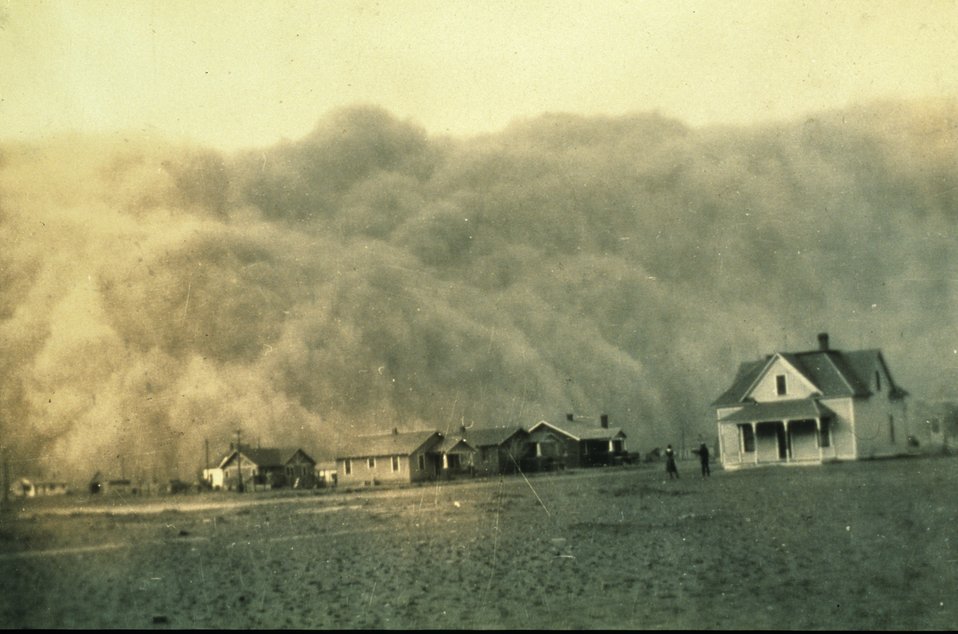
Dust storm approaching Stratford, Texas. Dust bowl surveying in Texas